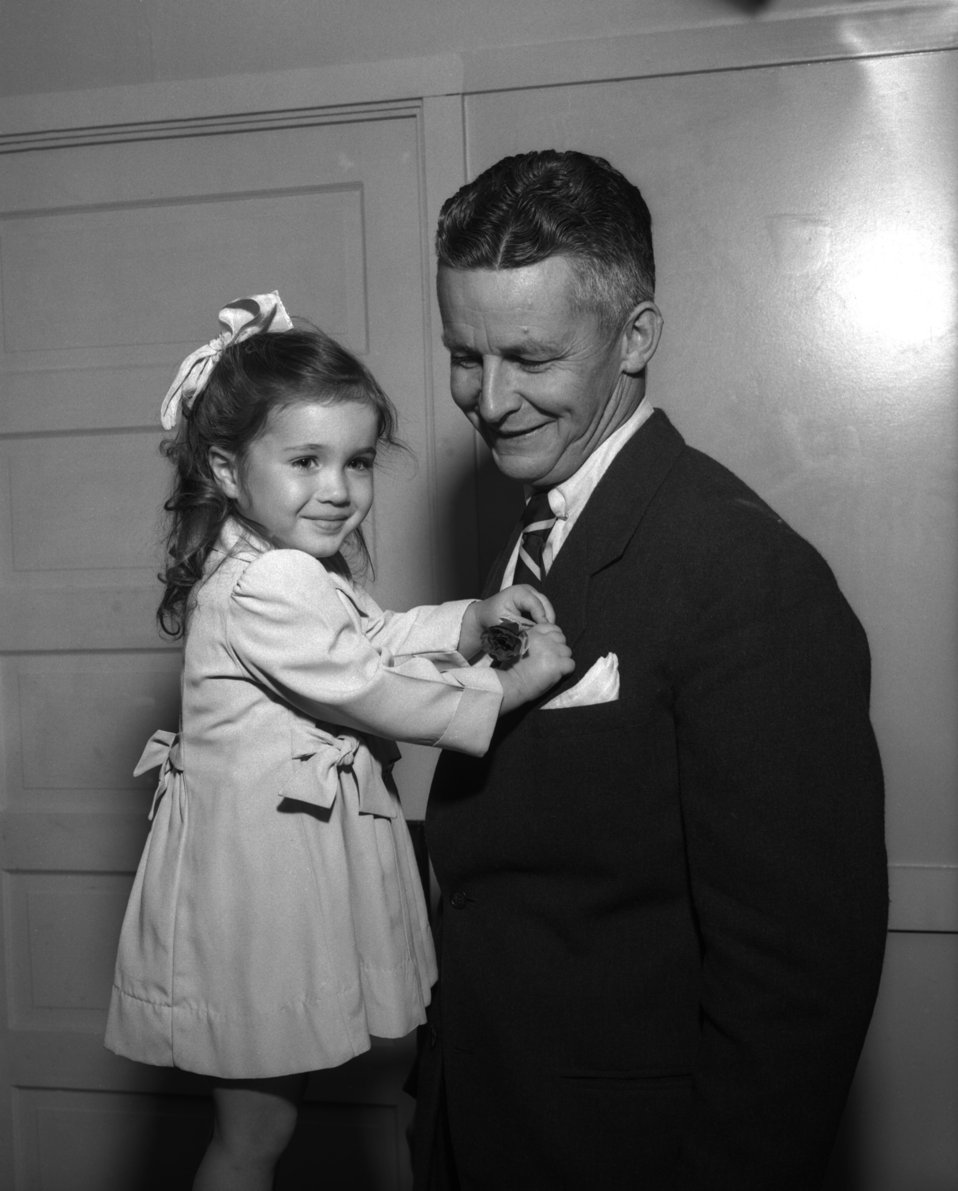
Poppy Sale Oak Ridge

004516-2

DOE photo by Ed Westcott Poppy Sale J.C. Franklin and Jenetta Pennington Oak Ridge Tennessee 5/1948